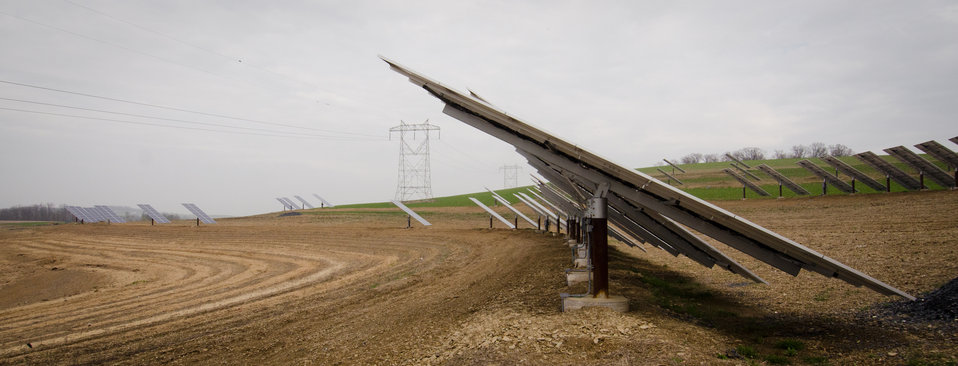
Heidel Hollow Farms, on Wednesday, April 20, 2011, has been a family owned farm since 1852 and is currently an 1,800 acre operation in Germansville, PA. Led by David Fink, President of Heidel Hollow Farms, they mainly produce and compact hay for exportand grow produce on 300 acres for local. With the financial help of the U.S. Department of Agriculture (USDA) an 896 panel solar array was recently installed on non farmable diversion ditches. Rated at 200 kilowatts, they project 240 megawatts of electricity to be produced each year, providing up to 70% of the farms electrical needs. Additionally, USDA financial assistance made it possible to replace the hay compactor’s diesel engines with clean low-maintenance, low operating cost electric motors to power the compactor's hydraulic system. The compactor increases the density of baled hay by two and half times for more efficient shipping to overseas customers.